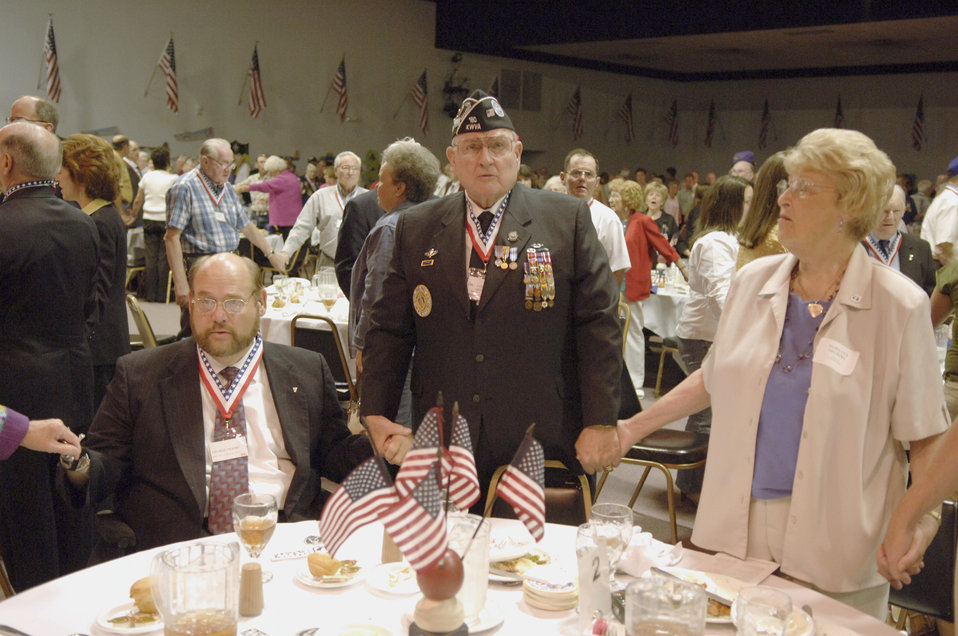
In their honor

Louis Dechert (standing) and his wife, Marietta, join hands with George Moore as they sing